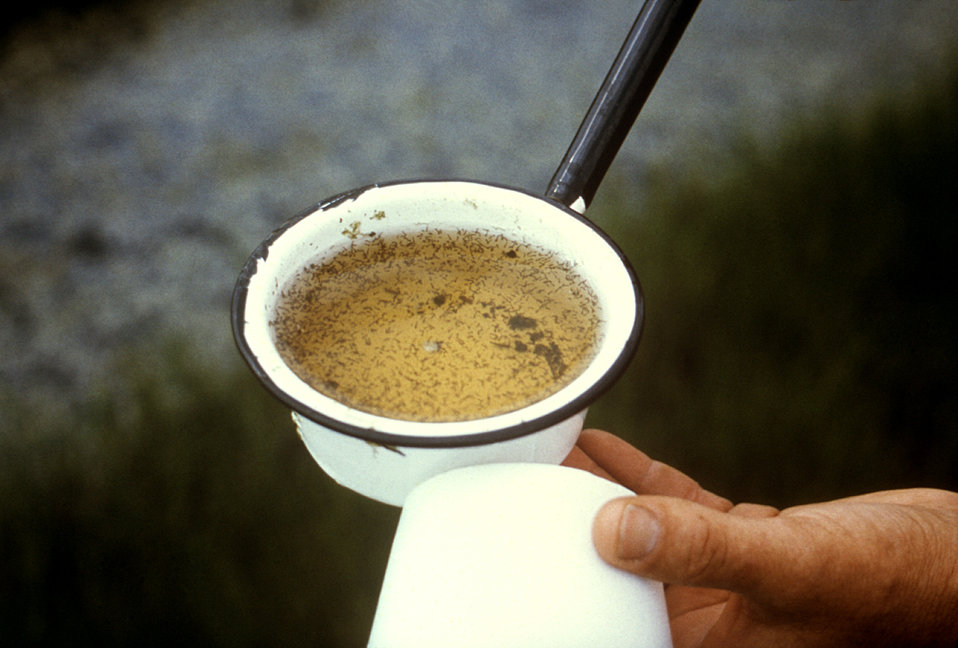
This 1981 photograph depicted an entomologic field technician who had extracted a dipper-full of water that was teaming with larval, 'floodwater' mosquitoes.